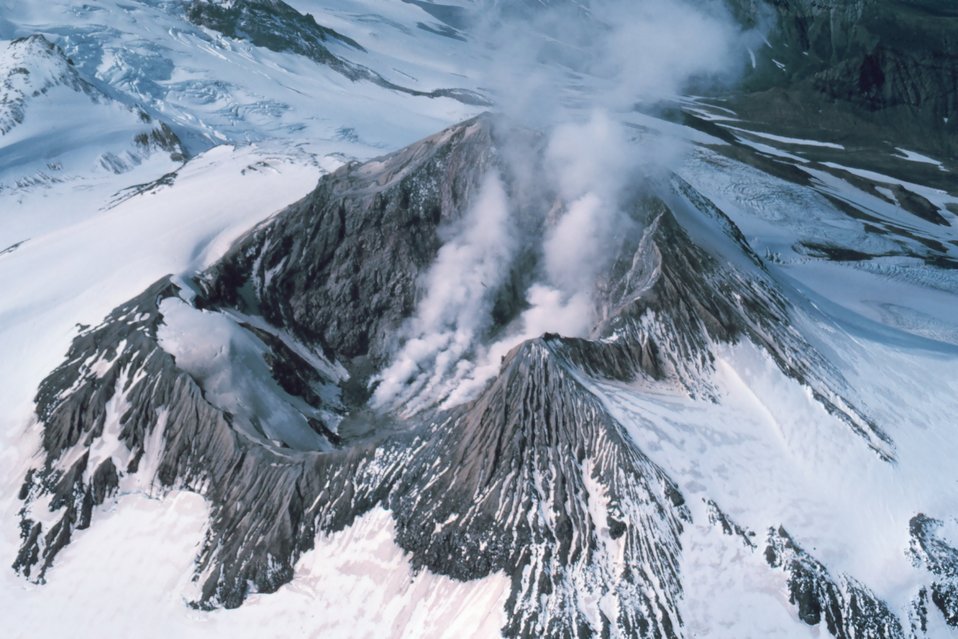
Katmai area